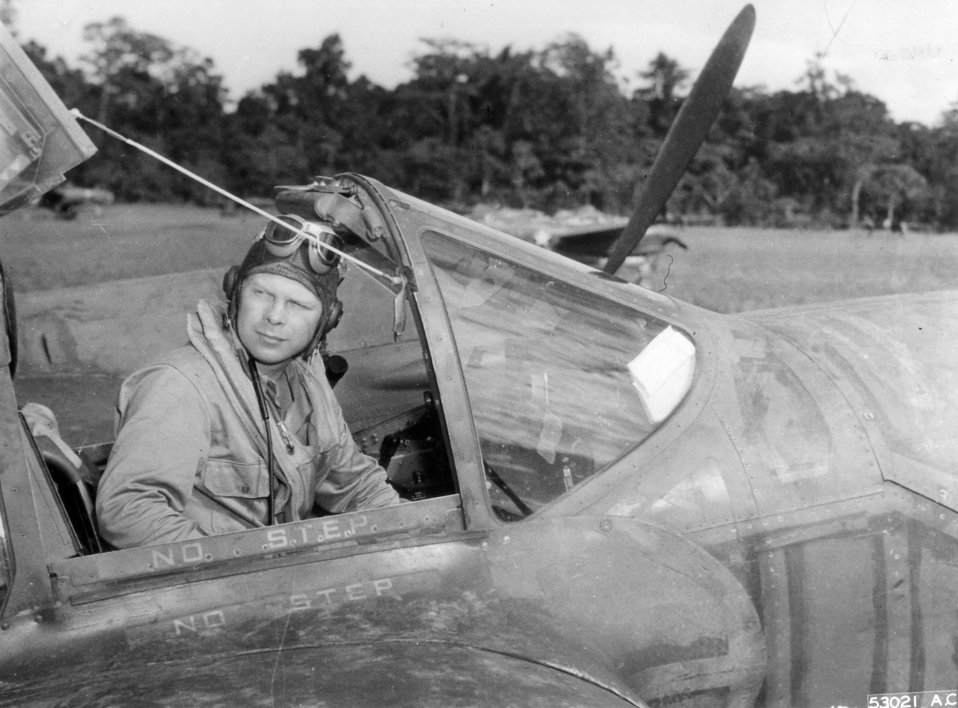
Dick Bong

1940's -- Dick Bong